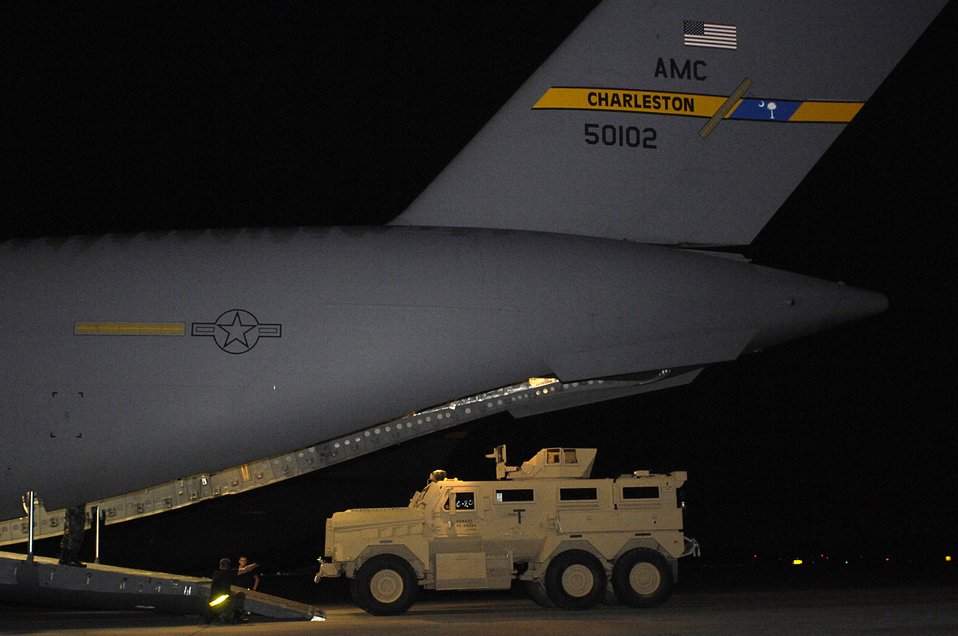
Destination: Iraq

Airmen from the 437th Aerial Port Squadron at Charleston AFB, S.C., load a Mine Resistant Ambush Protected armored vehicle on a C-17 Globemaster III for shipment to Iraq July 28. An estimated 3,500 MRAP vehicles are expected to be in Iraq by Dec. 31.